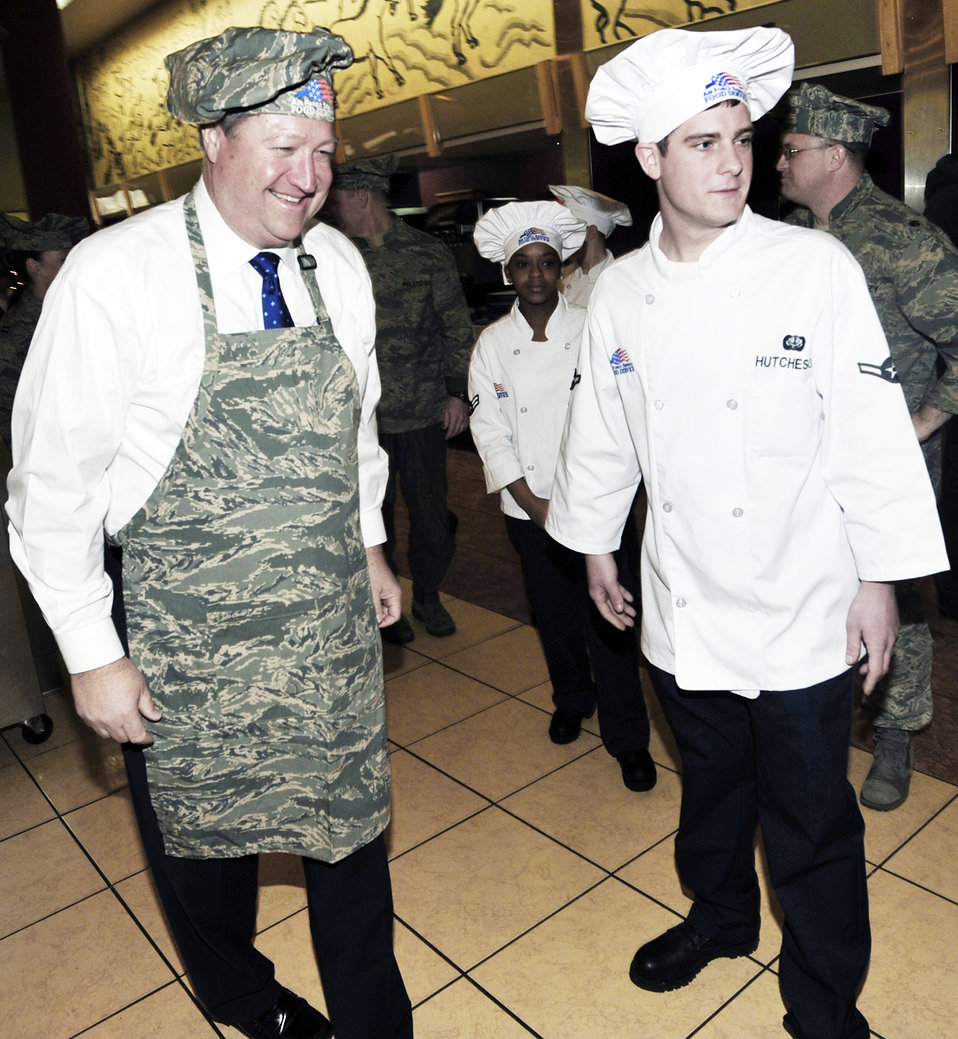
Secretary of the Air Force spends Christmas with Airmen in Korea

Secretary of the Air Force Michael B. Donley and Airman Casey Hutcheson prepare to serve Christmas Day dinner at the Gingko Tree Dining Facility at Osan Air Base, South Korea, Dec. 25, 2009. Secretary Donley met with Airmen assigned to the 51st Fighter Wing, 8th Fighter Wing, 7th Air Force and South Korean airmen during his two-day trip to the peninsula. Airman Hutcheson is assigned to the 51st Force Support Squadron at Osan AB.